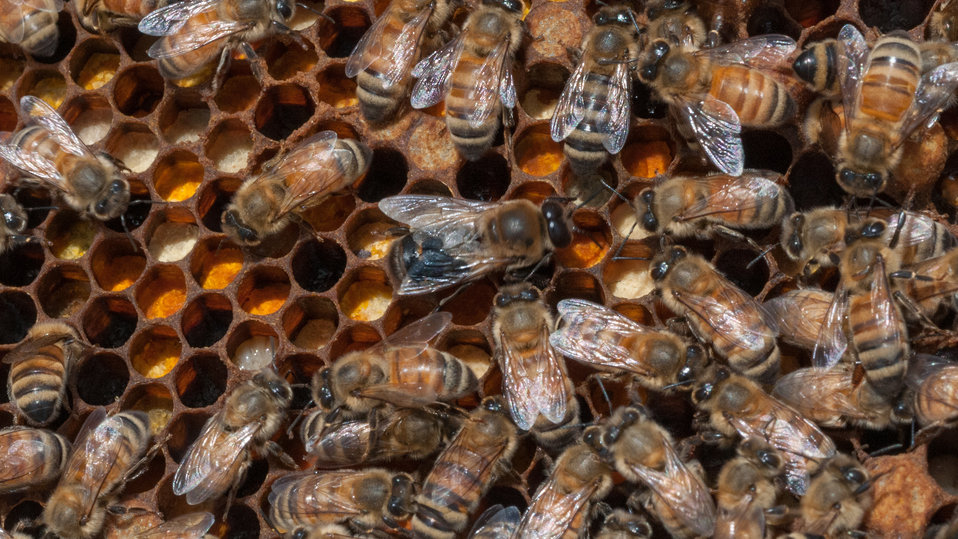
A queen Italian honey bee (large bee near center) in the U.S. Department of Agriculture People's Garden Apiary, atop the headquarters' Whtten Building in Washington, D.C., on Wednsday, May 22, 2013.